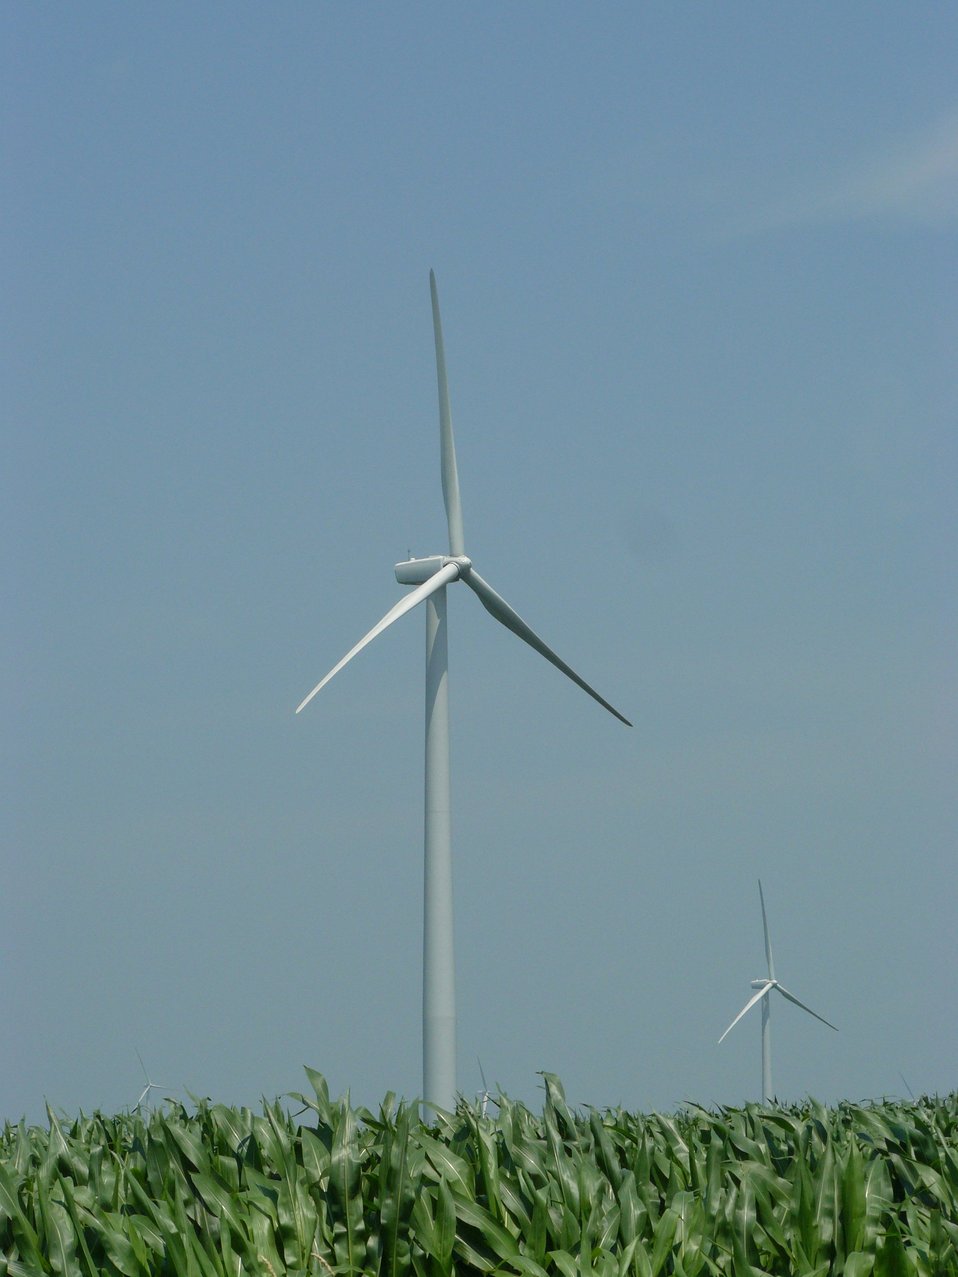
Wind turbines in corn field